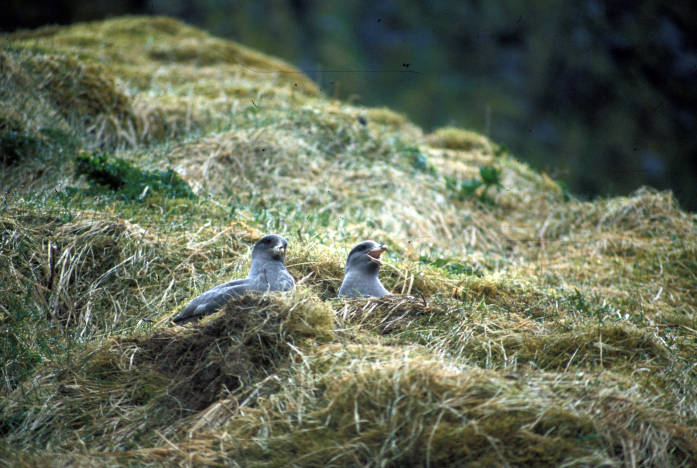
northern fulmars nesting

Alaska Maritime National Wildlife Refuge